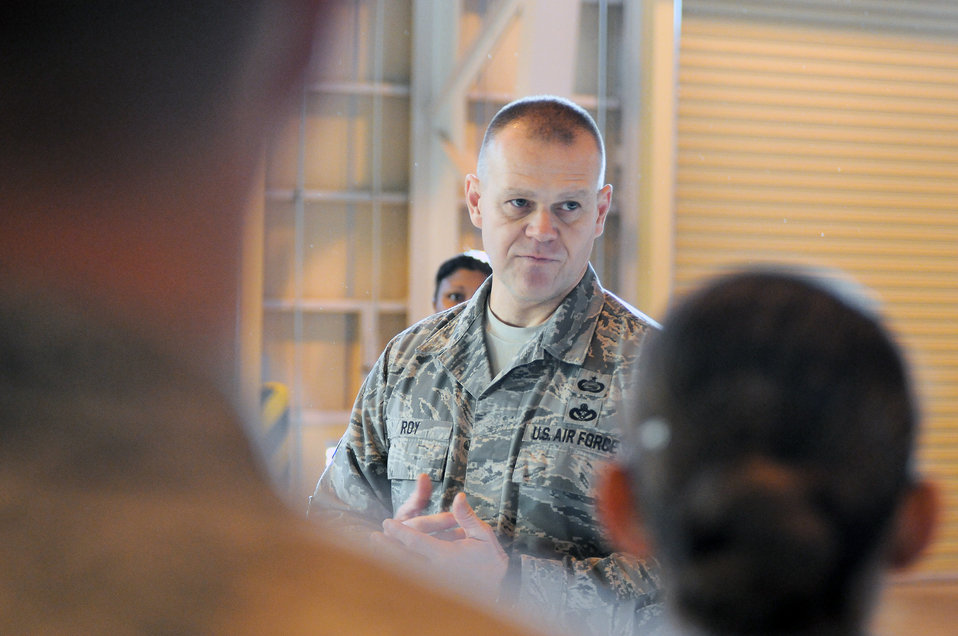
CMSAF visits Yokota Airmen

Chief Master Sgt. of the Air Force James Roy visits with members of the 374th Logistics Readiness Squadron Dec. 28, 2010, during his visit to Yokota Air Base, Japan. Chief Roy visited Yokota AFB as part of his tour of the Pacific.